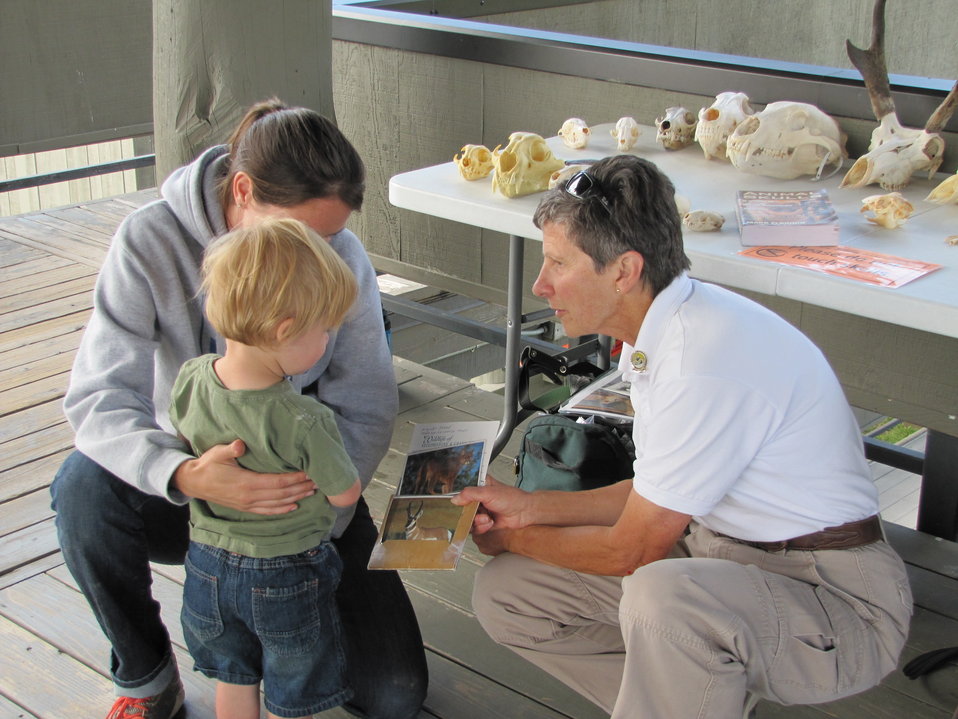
Never Too Young To Learn

National Elk Refuge volunteer Betty Mulcahy shares animal photos with a budding naturalist. During the summer months, volunteers provide informal contacts with visitors on the viewing deck of the Jackson Hole & Greater Yellowstone Visitor Center.